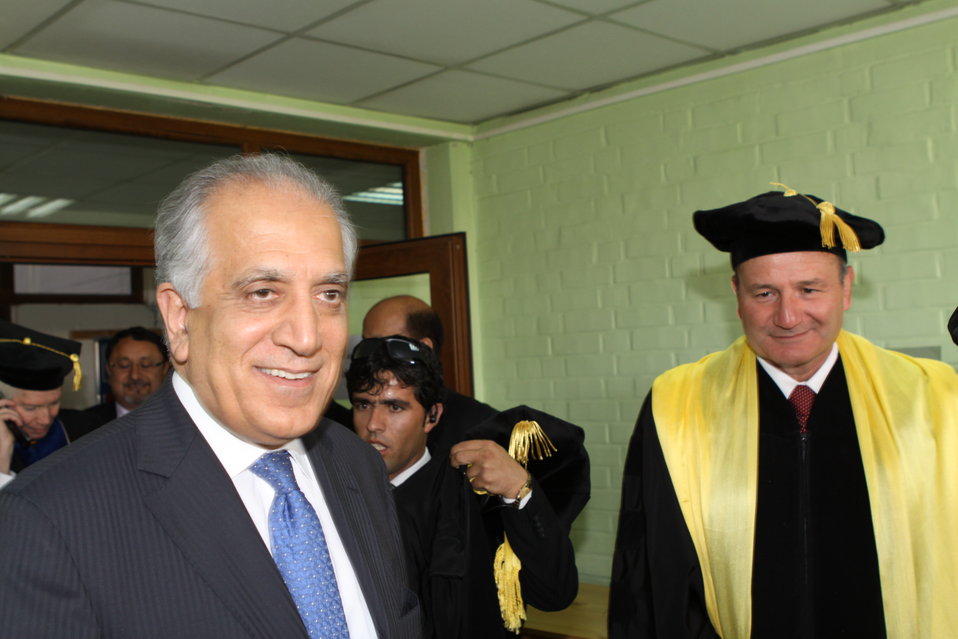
100526 AUAF Graduation 073